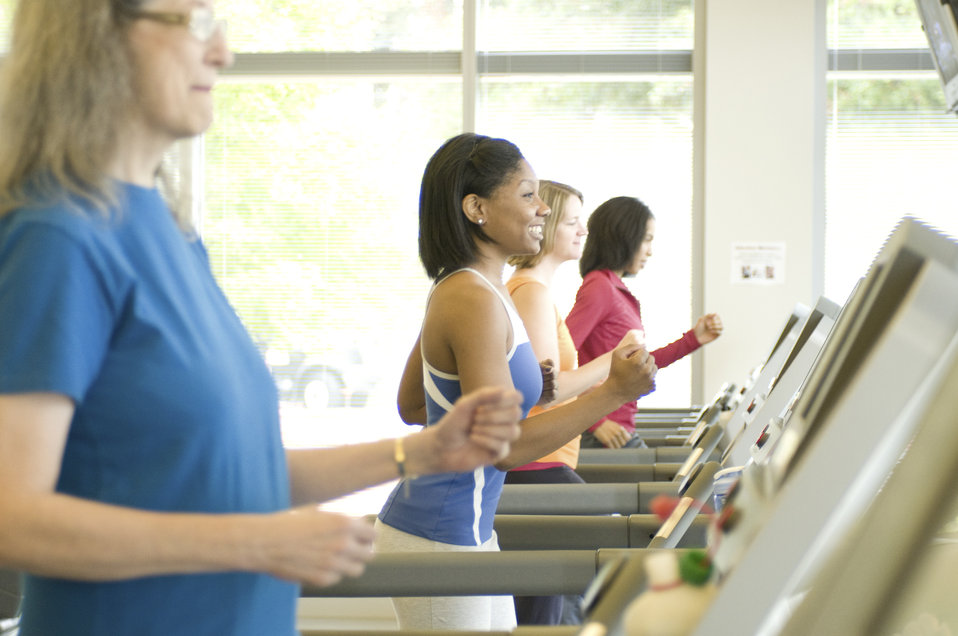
Women running on treadmills

This image was captured on one of the Centers for Disease Control's (CDC) campuses, in the facility's fitness center, where a number of scheduled group classes are provided for employees' health and enjoyment. In this particular view, four women were making use of the facility's treadmills, taking part in some aerobic exercise.